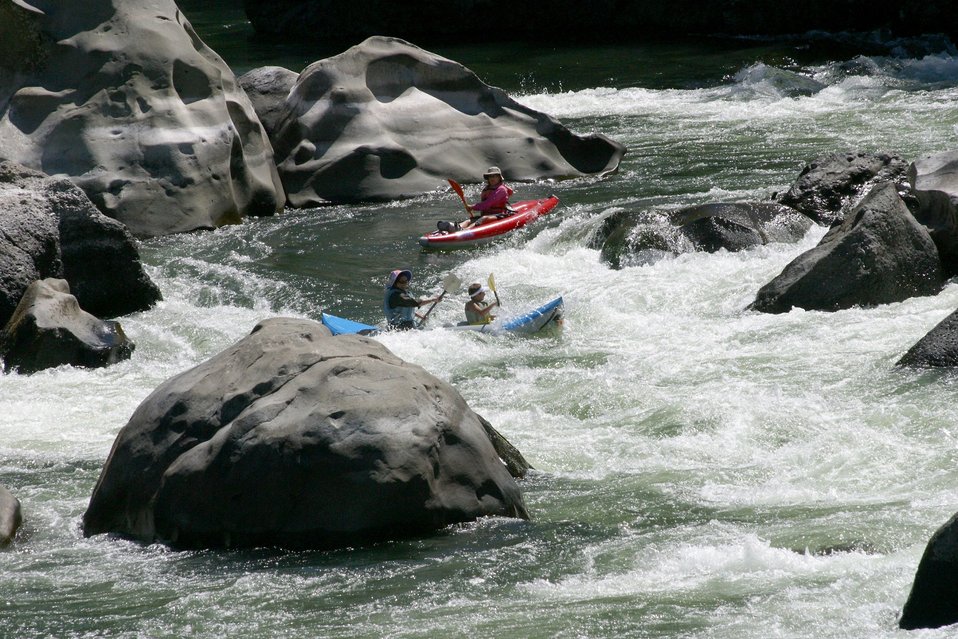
Boaters negotiate Blossom Rapids.